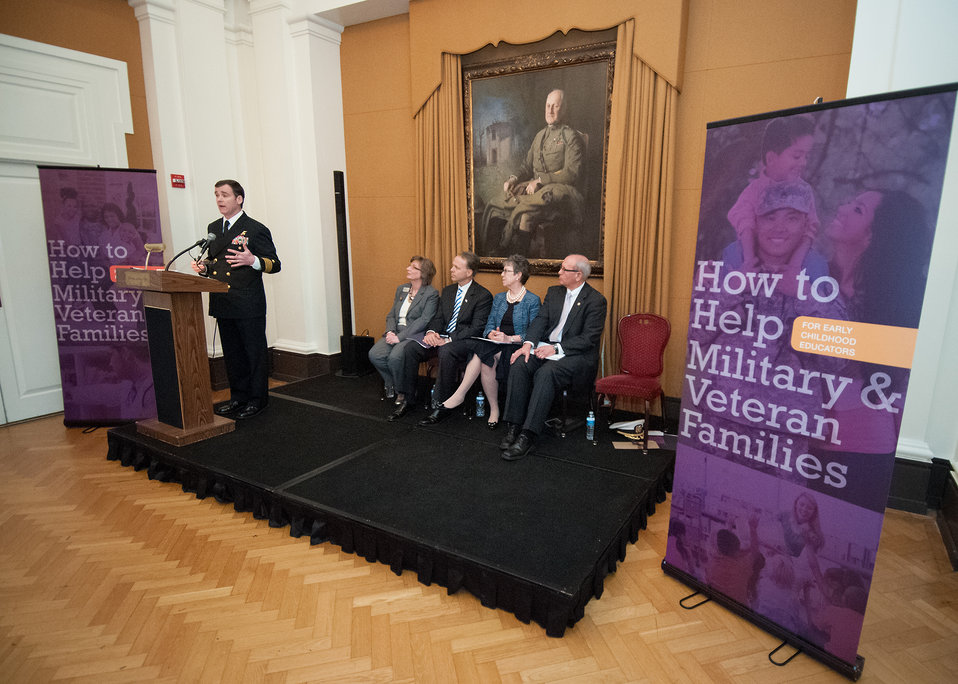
U.S. Navy Captain Todd Veazie, Executive Director of Joining Forces, represented First Lady Michelle Obama and Dr. Jill Biden’s, Joining Forces program at the United States Department of Agriculture (USDA) and Department of Defense (DOD) jointly launch event for the 'How to Help Military and Veteran Families' - a series of publications produced jointly by the USDA, National Institute of Food and Agriculture (NIFA) and DOD at the Army-Navy Club in Washington, DC, Monday, April 15, 2013.